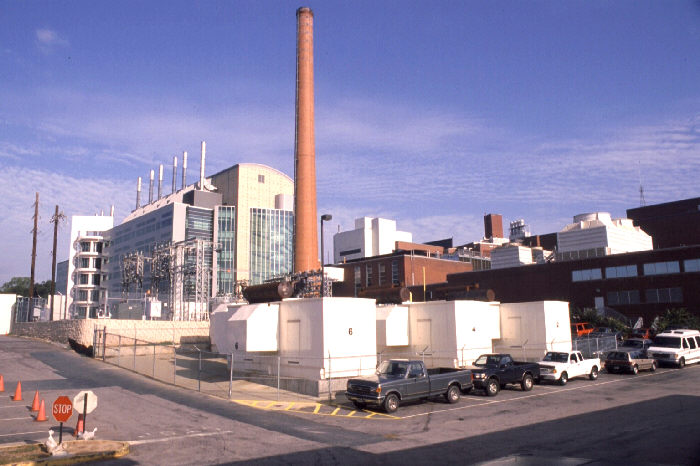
CDC Building 17, Roybal Campus.